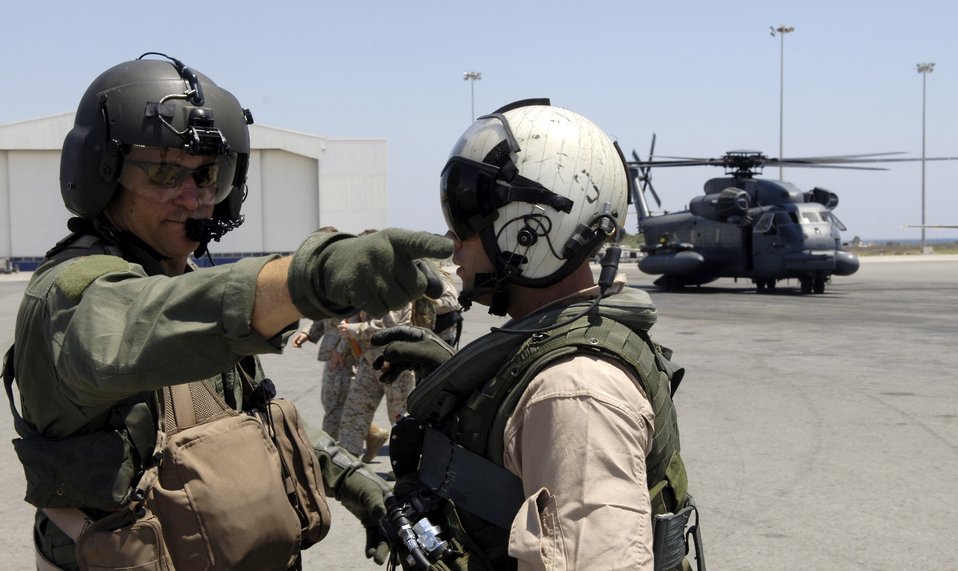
Airmen escort secretary of state to Lebanon

Maj. Jason Stanley, left, talks with a Marine crew member waiting to take Secretary of State Condoleezza Rice from Cyprus to the U.S. Embassy in Beirut, Lebanon, July 24. Major Stanley, an MH-53M Pave Low helicopter pilot with the 352nd Special Operations Group, Royal Air Force Mildenhall, was providing escort to the Marine helicopter transporting Secretary Rice.